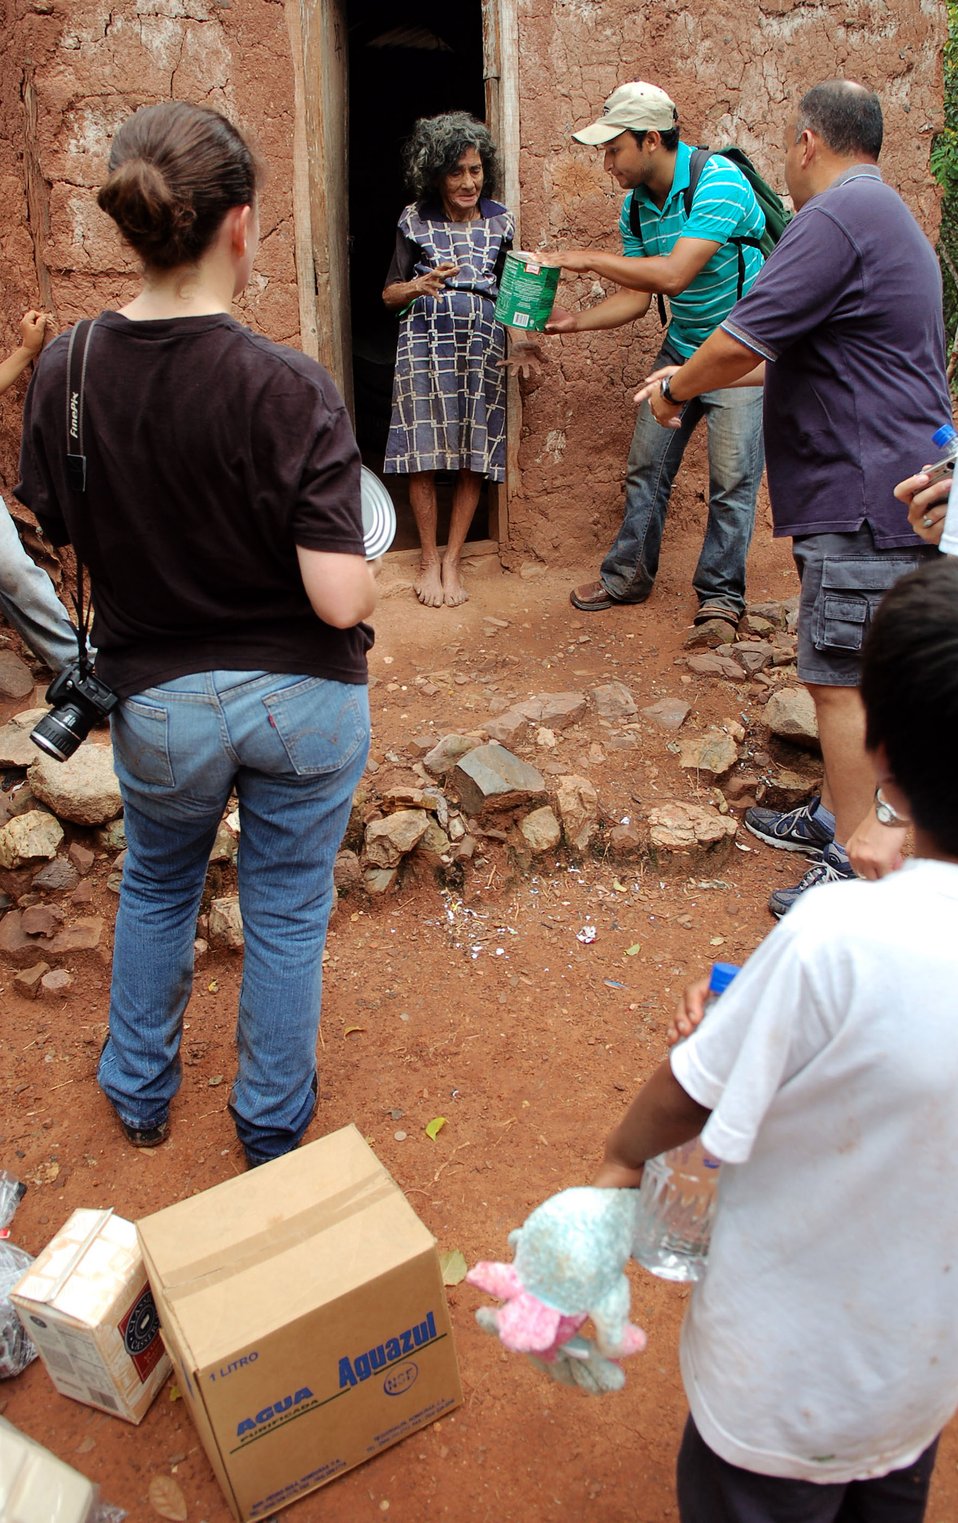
Servicemembers make mountain trek to deliver food

Jose Adonay Bonilla Valladares hands a can of vegetables to one of the mothers who lives in a remote mountain village in Honduras. The food was delivered by members of Joint Task Force-Bravo Sept. 29 to the mountain villagers. The JTF-Bravo Chapel sponsored the hike, which delivered 450 pounds of food to the residents. Mr. Valladares is the village teacher.